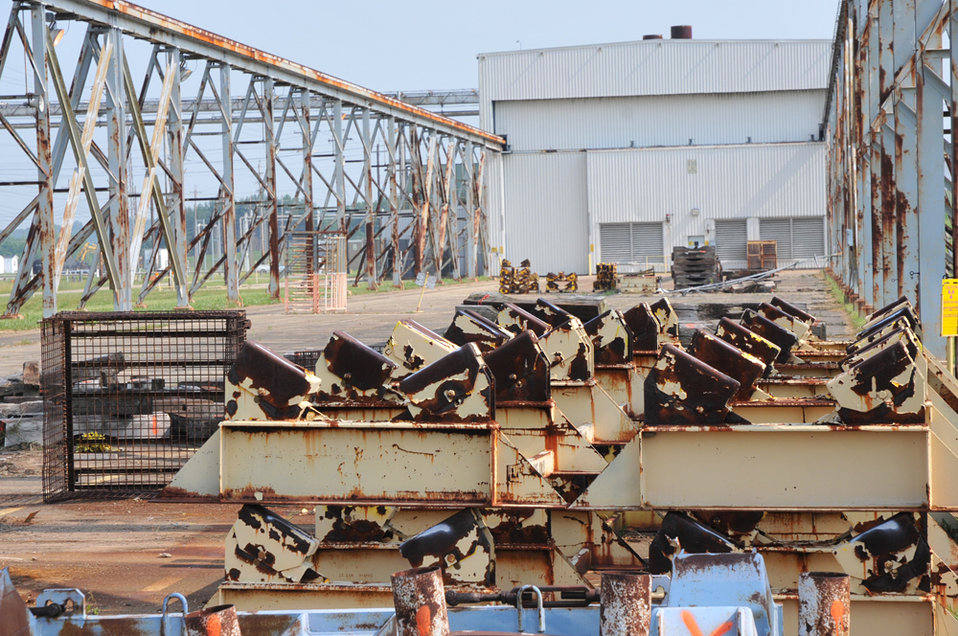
Piketon Recovery Act Update: Uranium Materials Disposal Continues

These photos show a storage area before and after workers removed excess uranium materials.